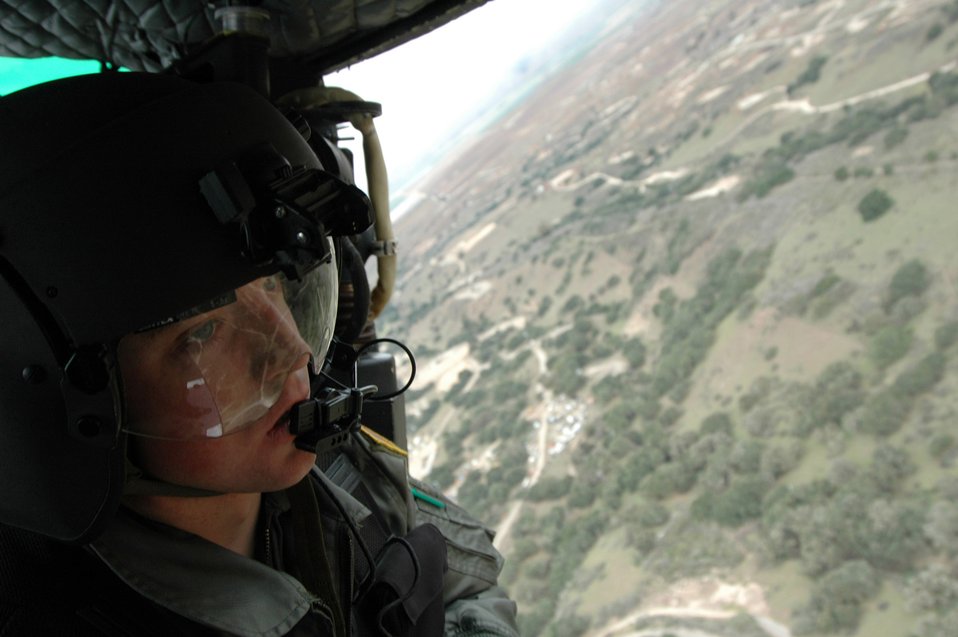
On drug patrol

VANDENBERG AIR FORCE BASE, Calif. (AFPN) -- A flight engineer with the 76th Helicopter Squadron takes part in a Joint Task Force-North mission. The squadron assisted civilian law enforcement agencies earlier this year in detecting and seizing more than one million marijuana plants.